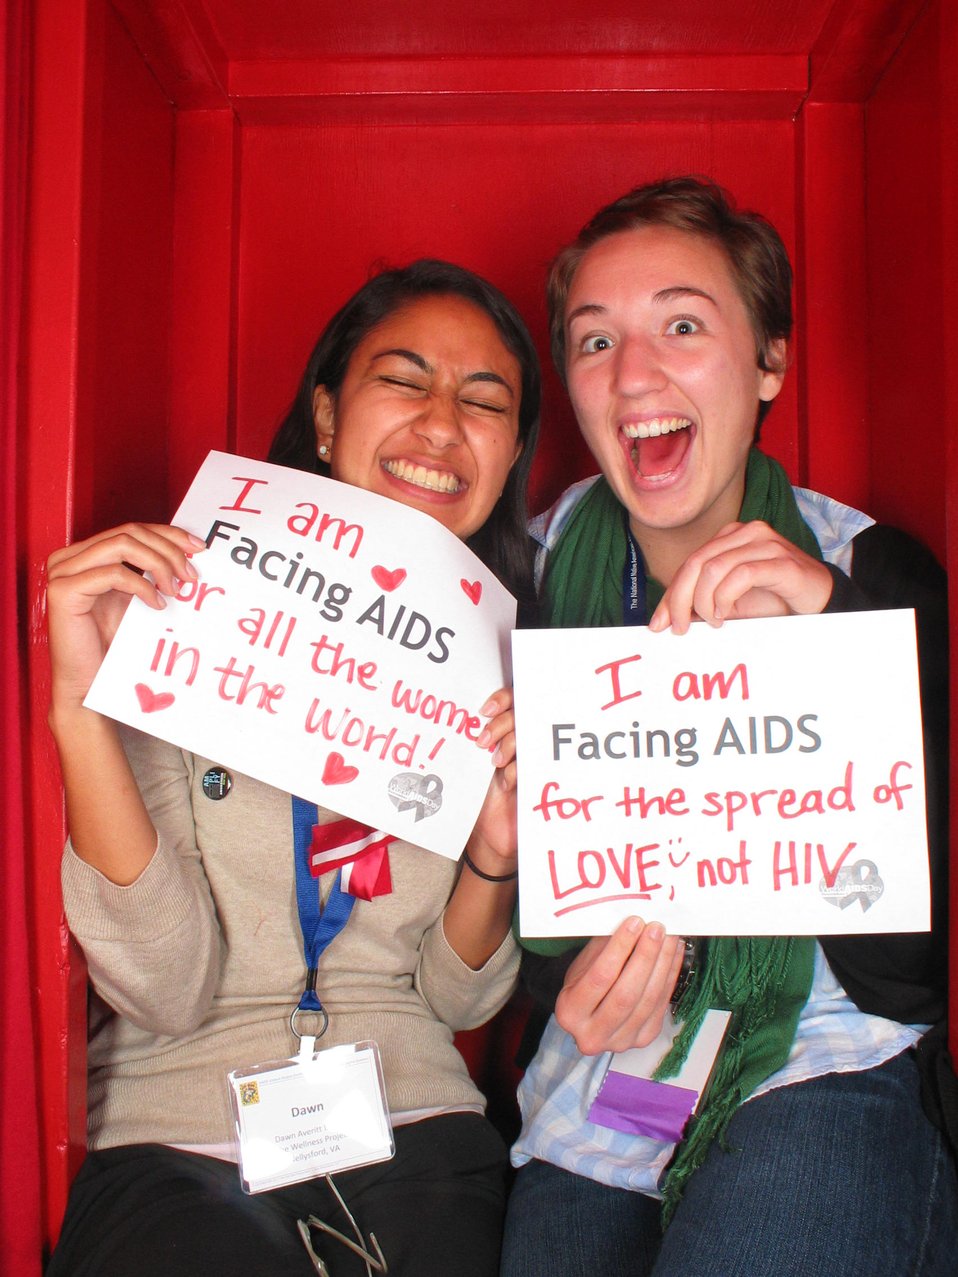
I am Facing AIDS for all the women in the world! I am Facing AIDS for the spread of LOVE not HIV